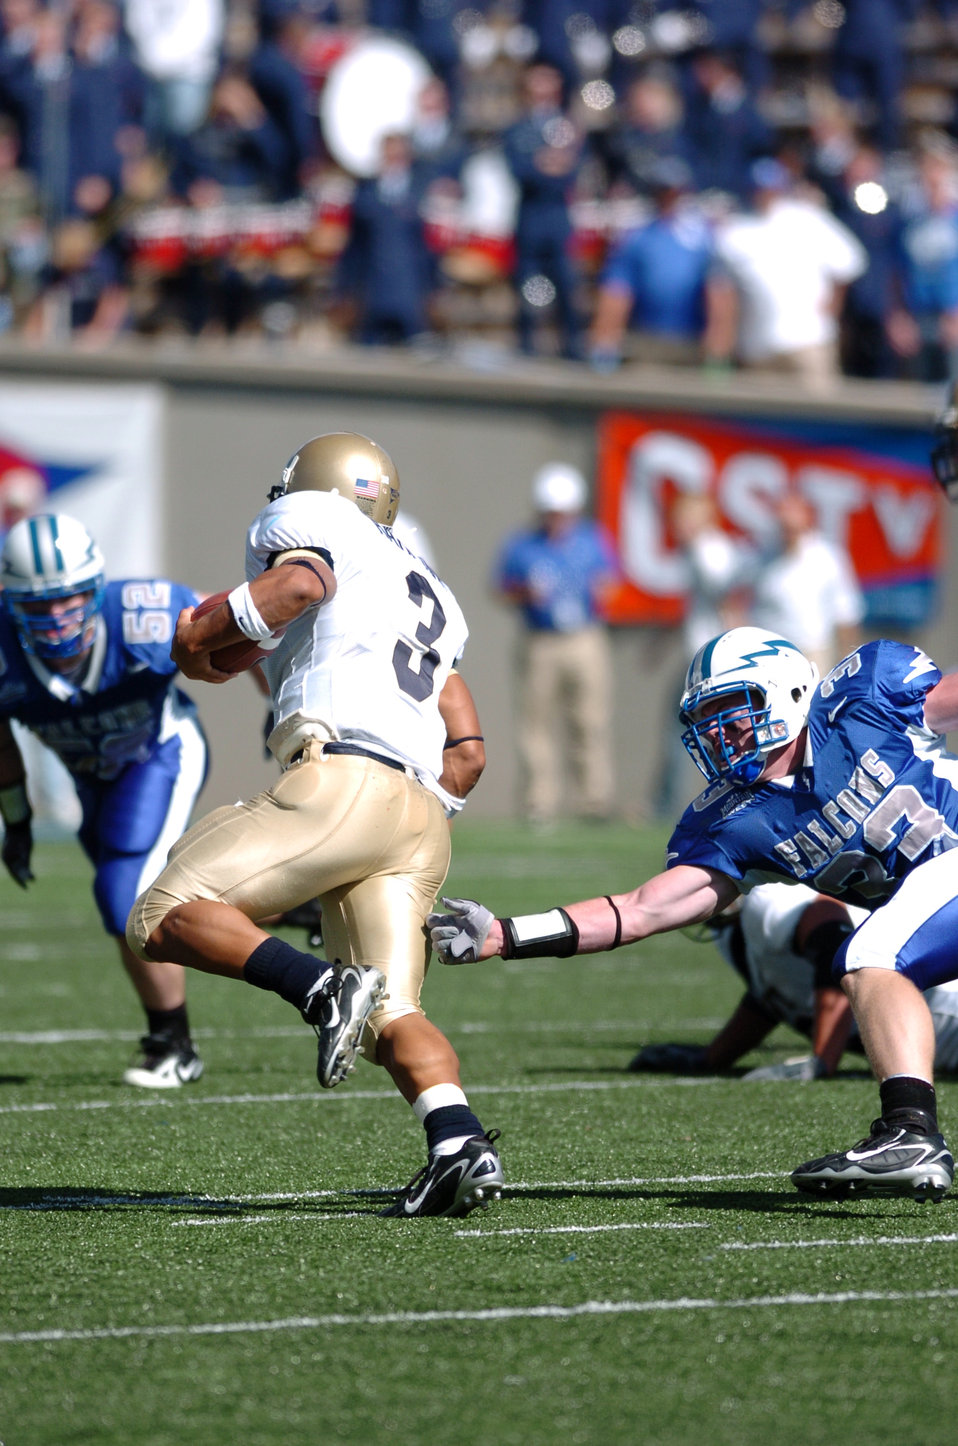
Short gain

Navy quarterback Brian Hampton eludes Air Force linebacker Drew Fowler Saturday for a short second-quarter gain. Hampton ran for 111 of Navy’s 317 rushing yards in their 24-17 win over the Falcons.